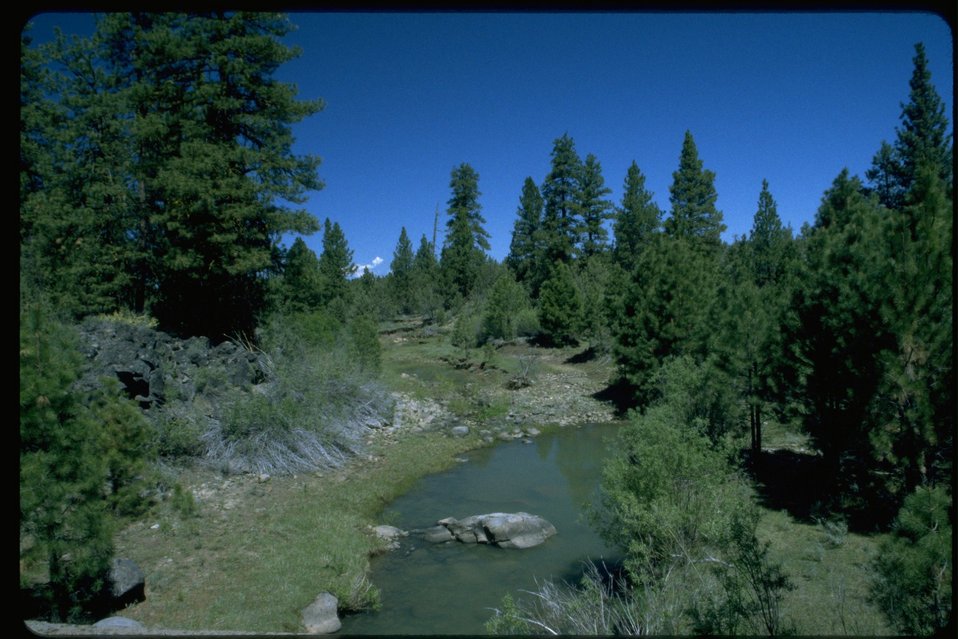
Riprian area near Barnes Valley along CCC (Civilian Conservation Corps) Road.